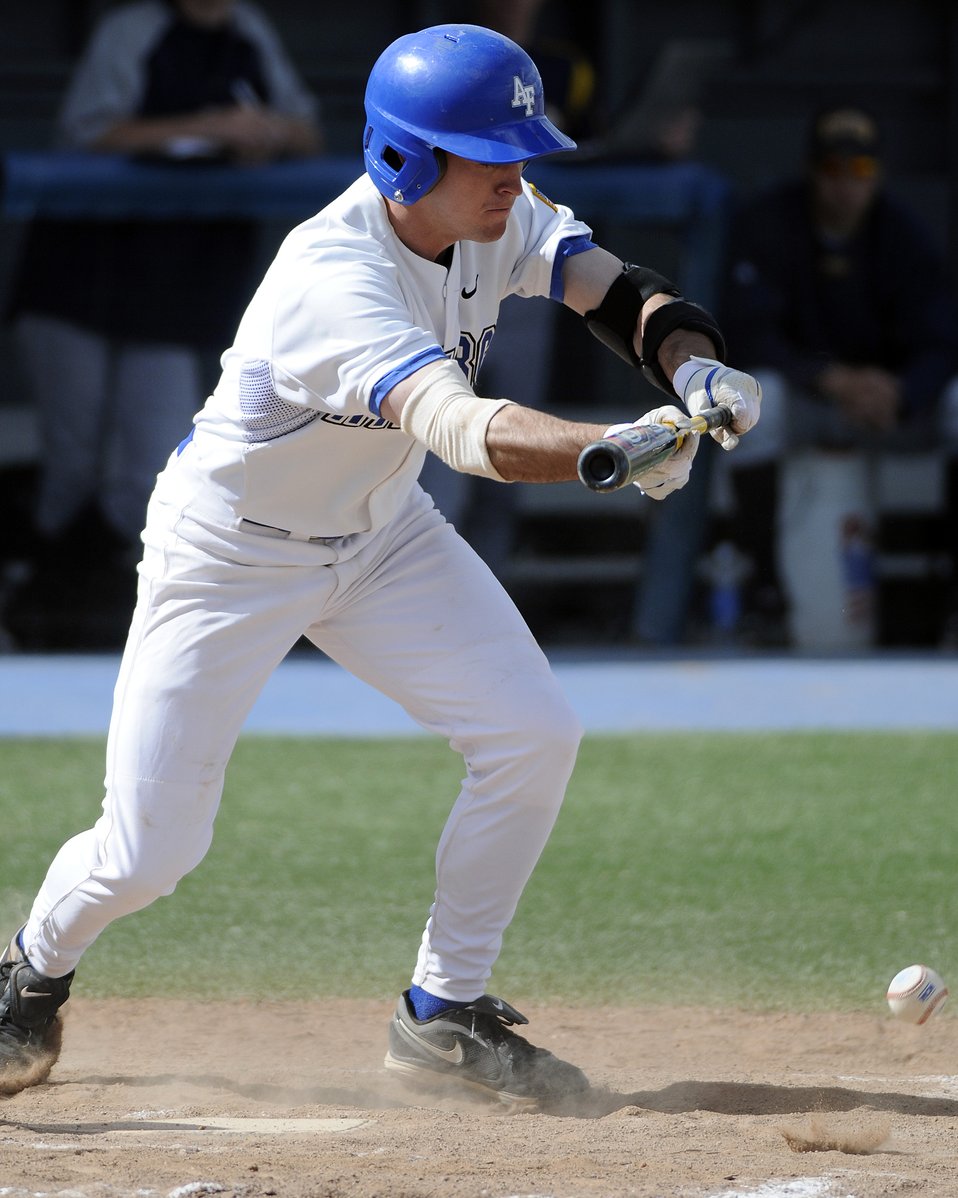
US Air Force Academy, CO

Sophomore outfielder Nathan Carter lays down a bunt during the 11-7 win against Colorado Christian at Falcon Field March 17. Carter reached base five times in the game, hitting a three-run homer, drawing two walks and getting hit by a pitch.The win improved the Falcons record to 6-9 on the season. Air Force returns to action with a three-game series at UNLV starting Friday, March 20.